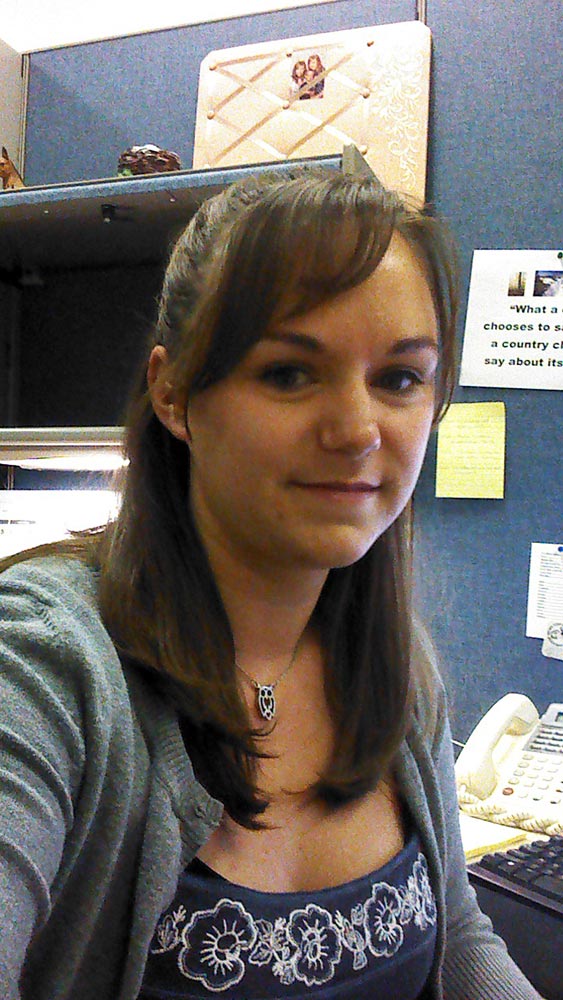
Tiffany Rollins works for the Service’s Wildlife and Sport Fish Restoration program. She served in the Air Force from 2004 to 2008 as a crew chief on F16 fighter jets. Her work left her lungs damaged and after a discharge she came to the Fish and Wildlife Service while also pursuing her bachelor’s degree in Biology. She says, “As a veteran I am able to take advantage of opportunities that help me in achieving my goals of being a college graduate and having a stable career that I enjoy. “